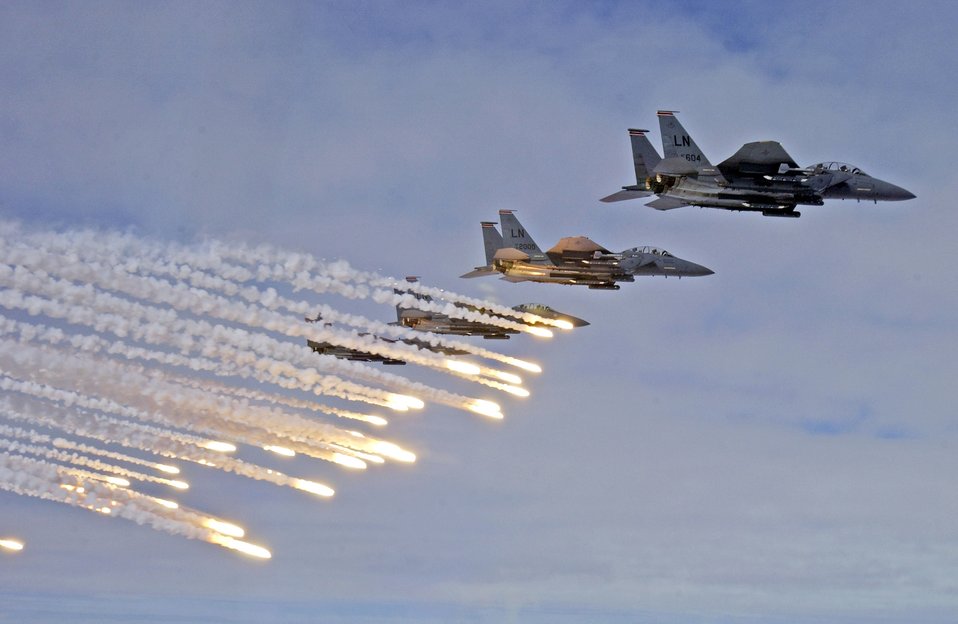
Excalibur bombing competition

SUFFOLK, England -- F-15E Strike Eagles launch chaff and flares while flying toward the Royal Air Force Holbeach bombing range, Aug. 10 to practice for the upcoming Excalibur bombing competition. Airmen from the 494th Fighter Squadron at RAF Lakenheath, England, are participating in the competition.